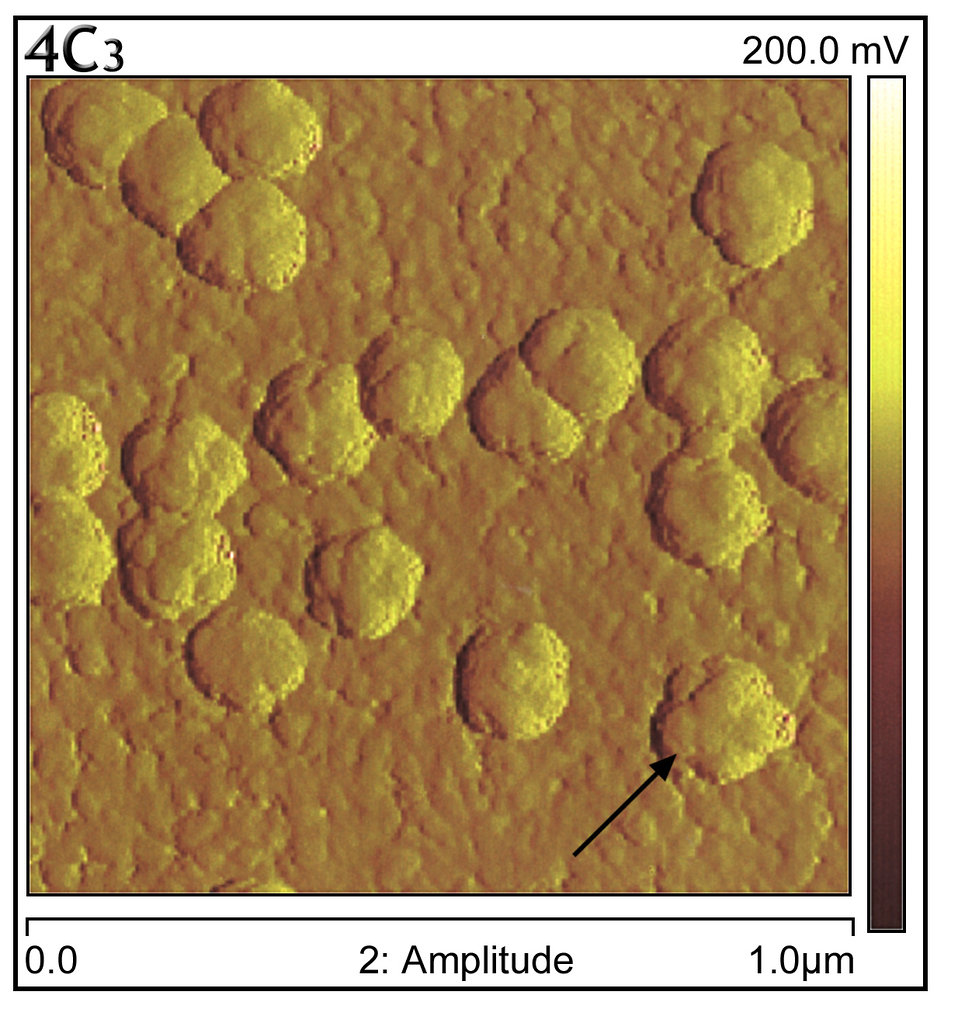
Using the NanoScope IV MultiMode� atomic force microscope, the 'knobby' virion surface structure was visualized (arrow).